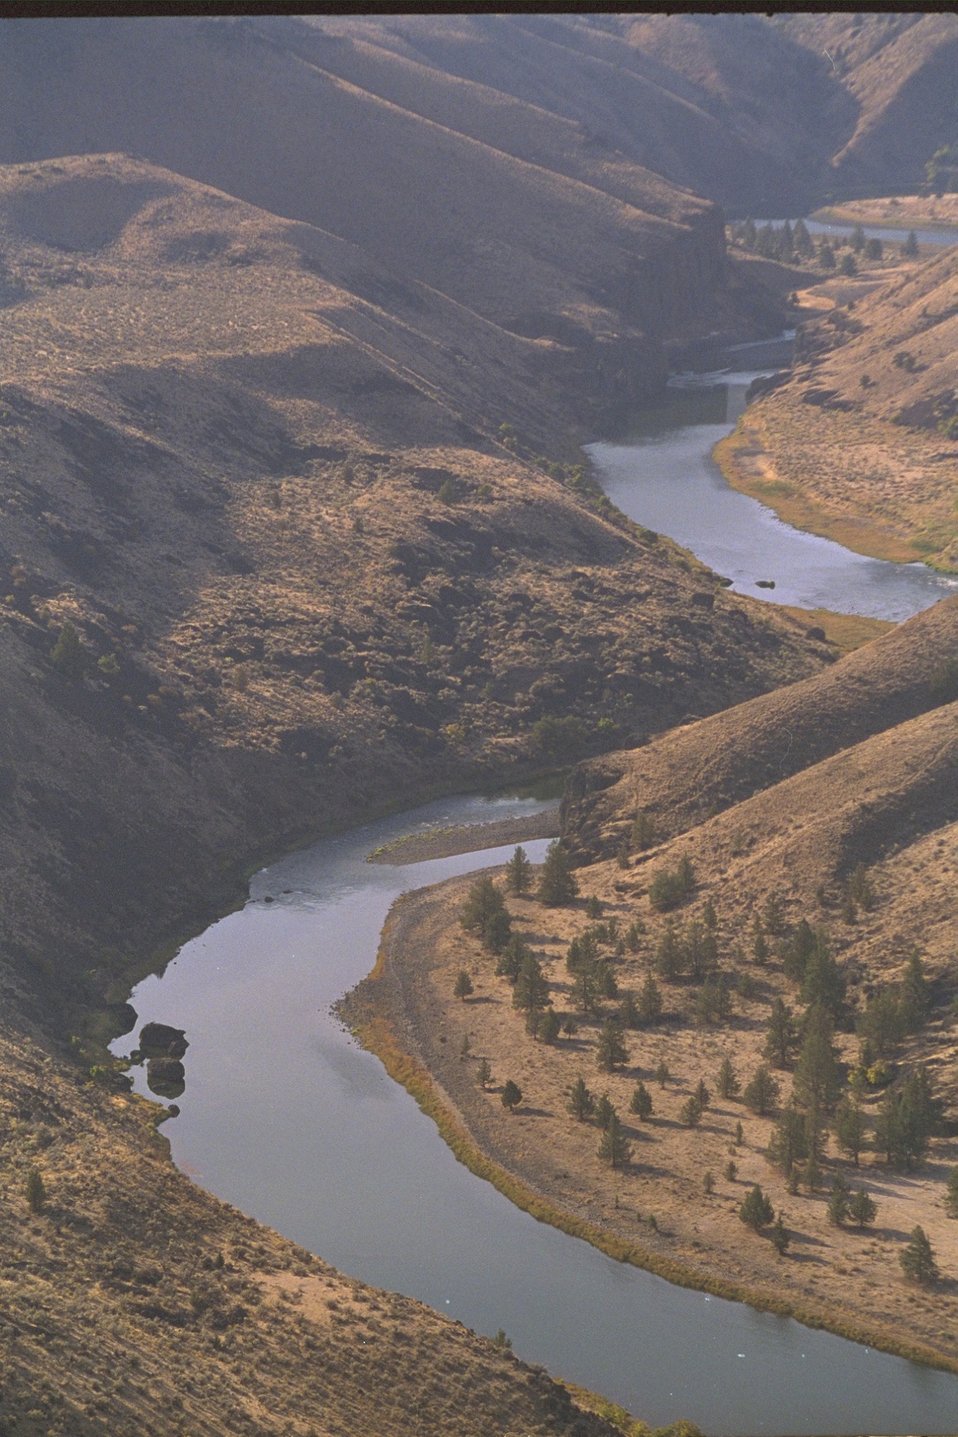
Looking up the John Day River from a viewpoint up in the hills.